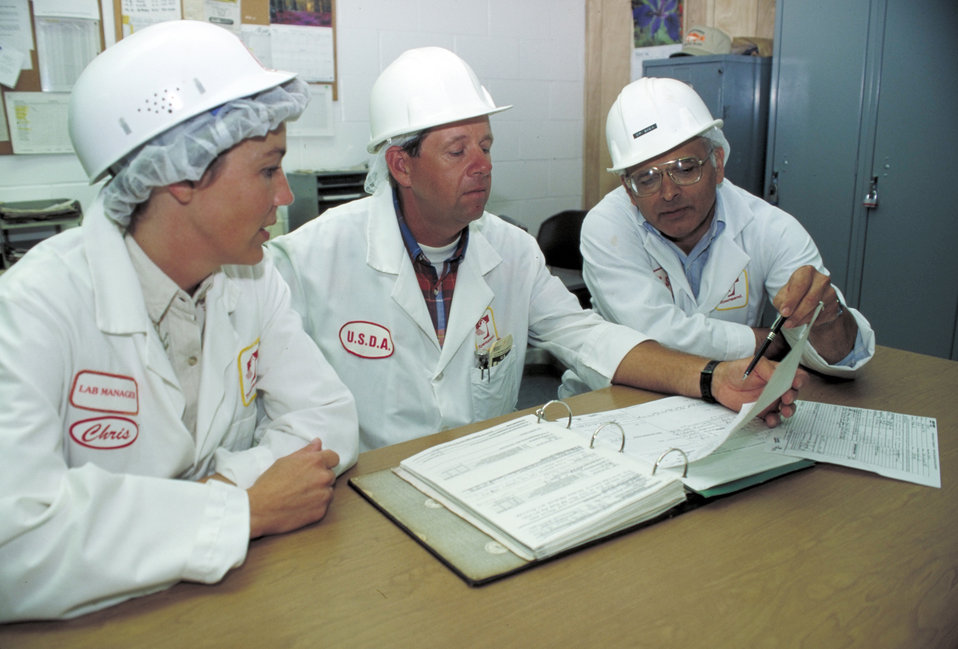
U.S. Department of Agriculture (USDA) Food Safety Inspection Service (FSIS) inspector and plant personnel review plant documentation to ensure compliance with Hazard Analysis and Critical Control Points (HACCP) plan on May 13, 1996.